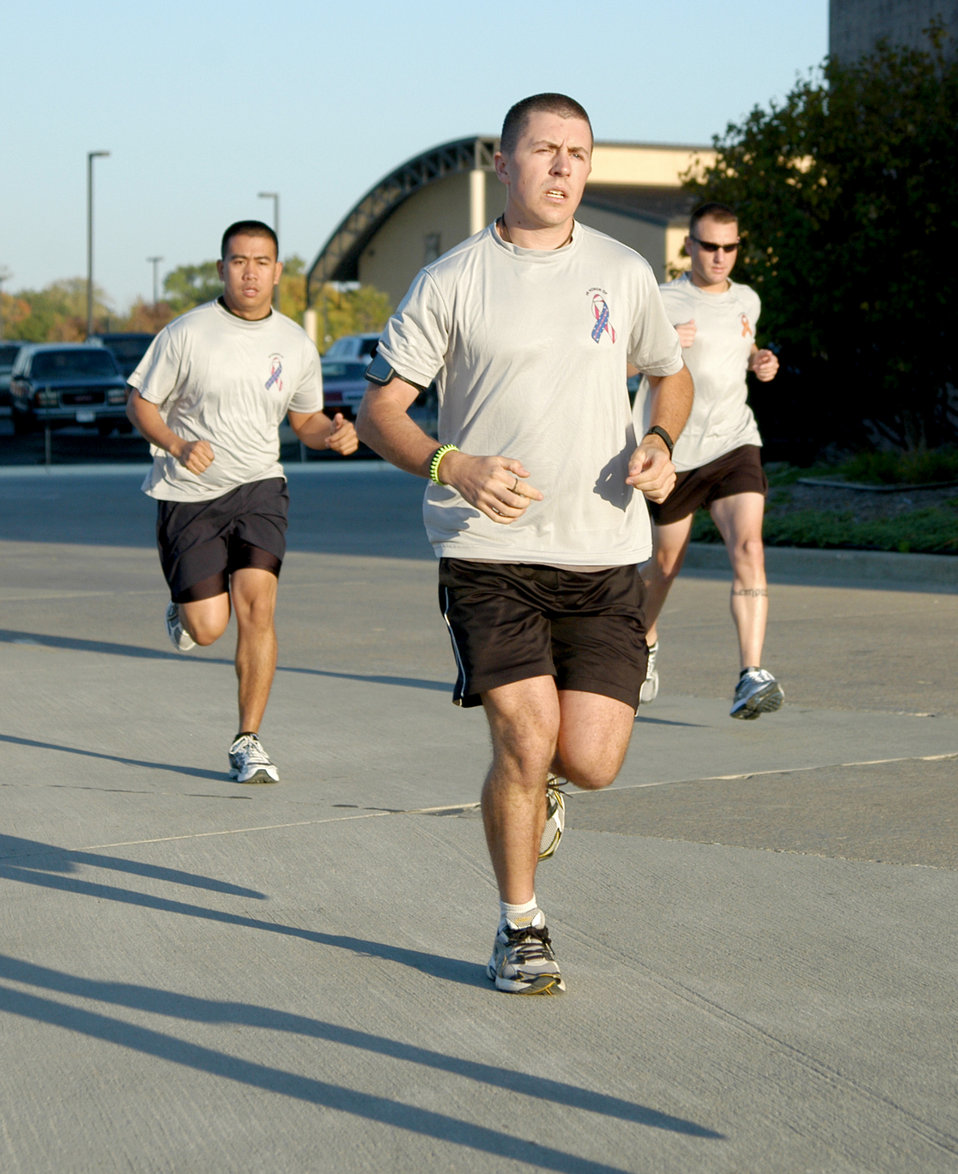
Airmen run in memoriam

Airman 1st Class David J. Smith (front), Airman 1st Class Wilson Delos Trino (left), and Master Sgt. Johnathan M. Ward begin a 9-mile run Oct. 8, 2010, at Offutt Air Force Base, Neb. Airman Smith is a fitness specialist with the 55th Force Support Squadron. Airman Trino is a force management operations technician with the 55th FSS. Sergeant Ward is a Personnel Reliability Program monitor for the 55th Security Forces Squadron. All three are members of the 55th FSS marathon running team.